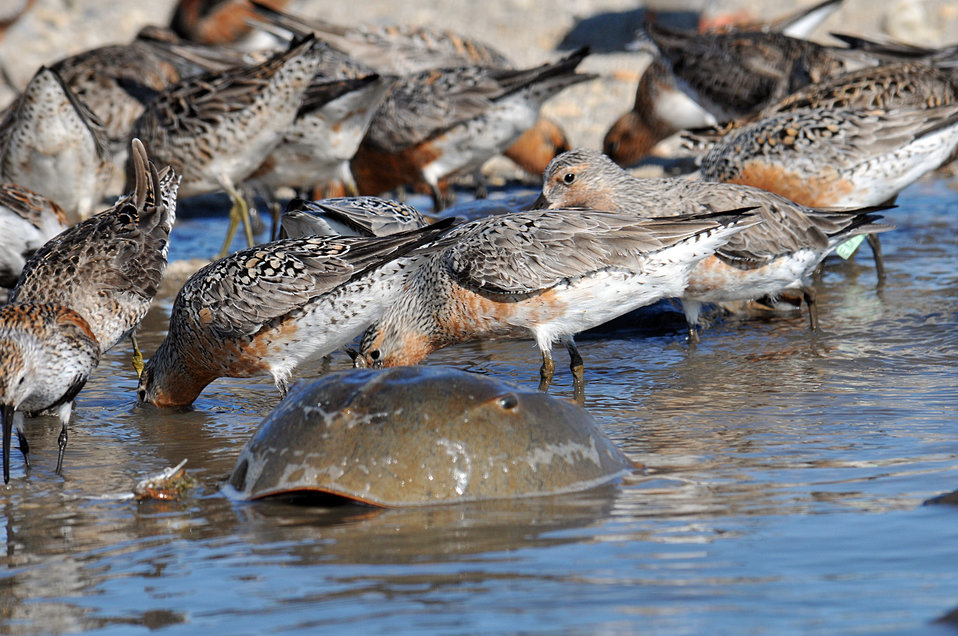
Red Knot and Horseshoe Crab

Mispillion Harbor, Delaware.